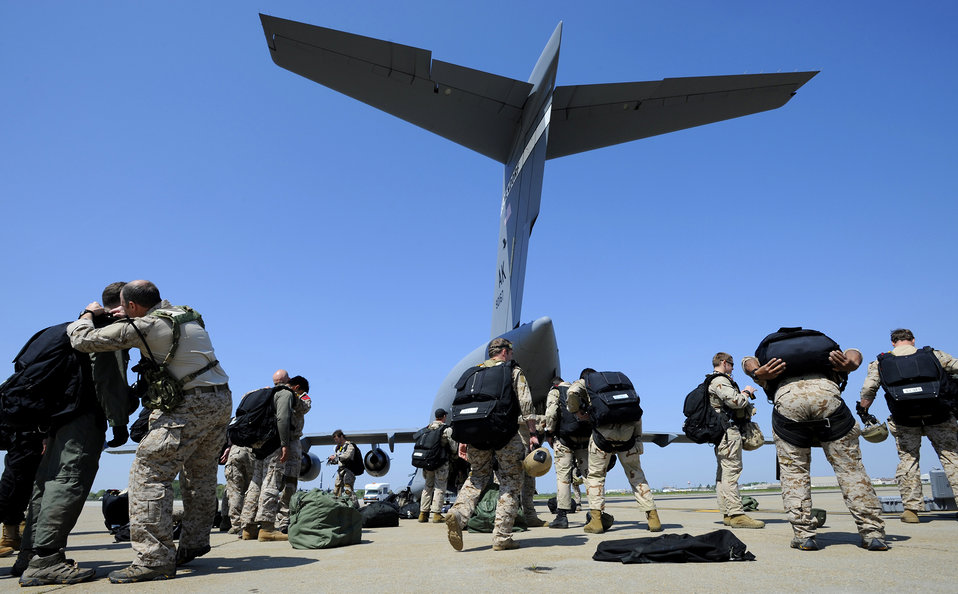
Joint training at 12,500 feet

Navy SEALs prepare their parachutes before boarding a C-17 Globemaster III April 15, 2010, at Naval Air Station Norfolk Va., April 15, 2010. The jumps were part of joint training exercise with the 517th Airlift Squadron from Elmendorf Air Force Base, Alaska. The training consisted of high altitude, high opening and high altitude, low opening jumps between 5,000 and 12,500 feet.